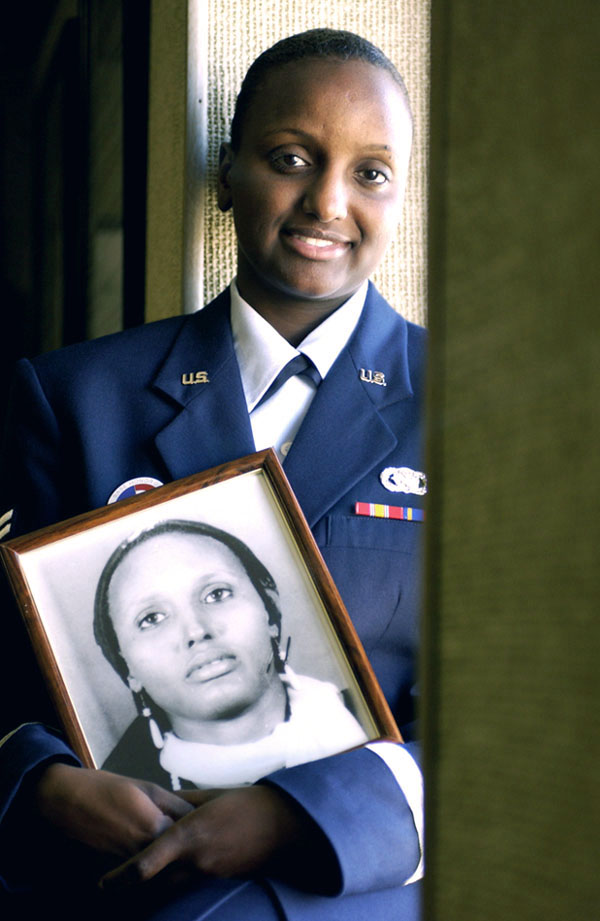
Airman struggles to save her family

LANGLEY AIR BASE, Va. -- Airman 1st Class Ayaan Nduli holds a photo of her mother, Sahra Cali Sherwac. Airman Nduli is attempting to take her family out of a refugee camp in Kenya and bring them to the United States.